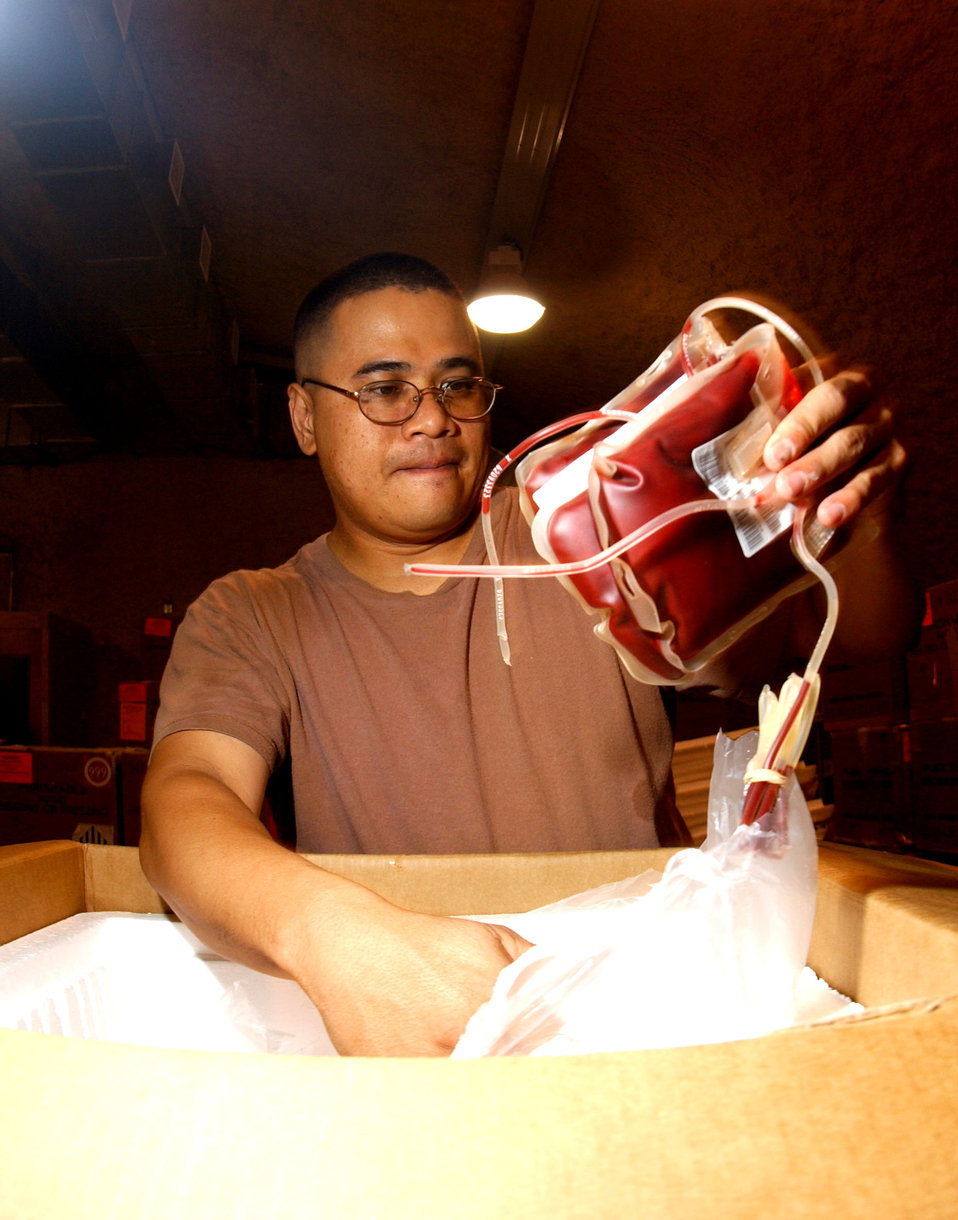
Operation Iraqi Freedom

SOUTHWEST ASIA -- Tech. Sgt. Octavio Suarez unpacks blood that will be used to help care for injured troops in Iraq and Afghanistan. The sergeant, with the 379th Expedionary Medical Group, deployed here from the 355th Medical Group Davis-Monthan Air Force Base, Ariz.